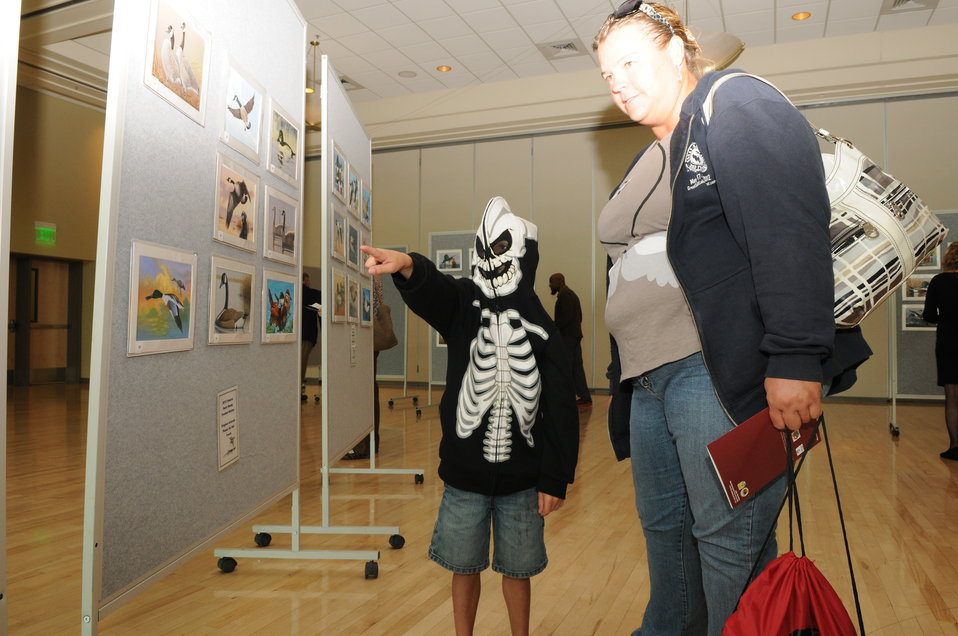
Youth Involvement

The U.S. Fish & Wildlife Service sponsored the 2012 Federal Duck Stamp Art Contest September 28 and 29 in Ogden, Utah, at Weber State University. A panel of five judges was responsible for choosing the art work used to design the 2013-2014 Migratory Bird Hunting and Conservation Stamp.